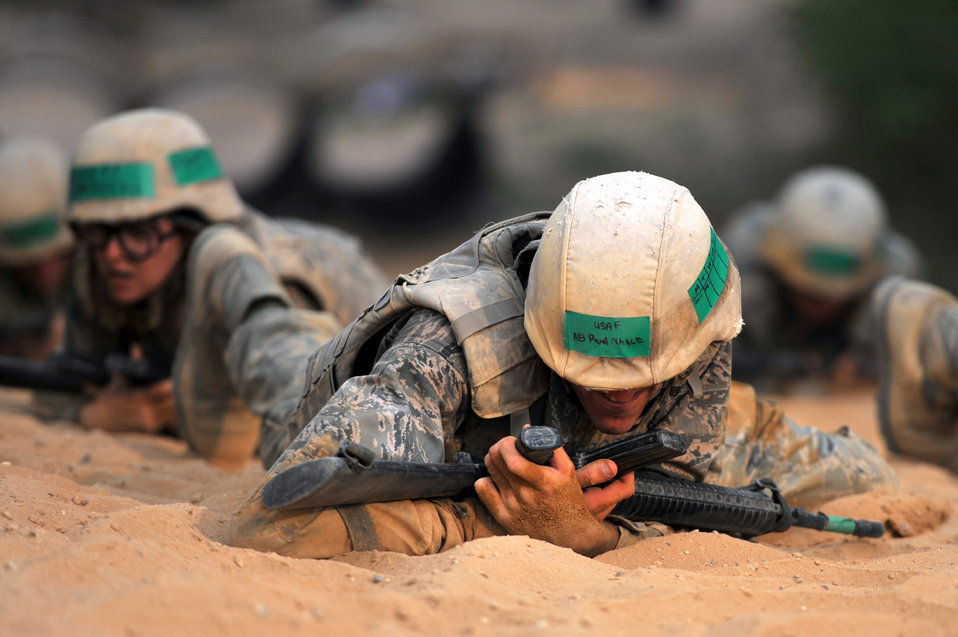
BEAST

Basic trainees go through their sixth week of Air Force basic military training at the Basic Expeditionary Airman Skills Training on May 25, 2011, at Lackland Air Force Base, Texas.